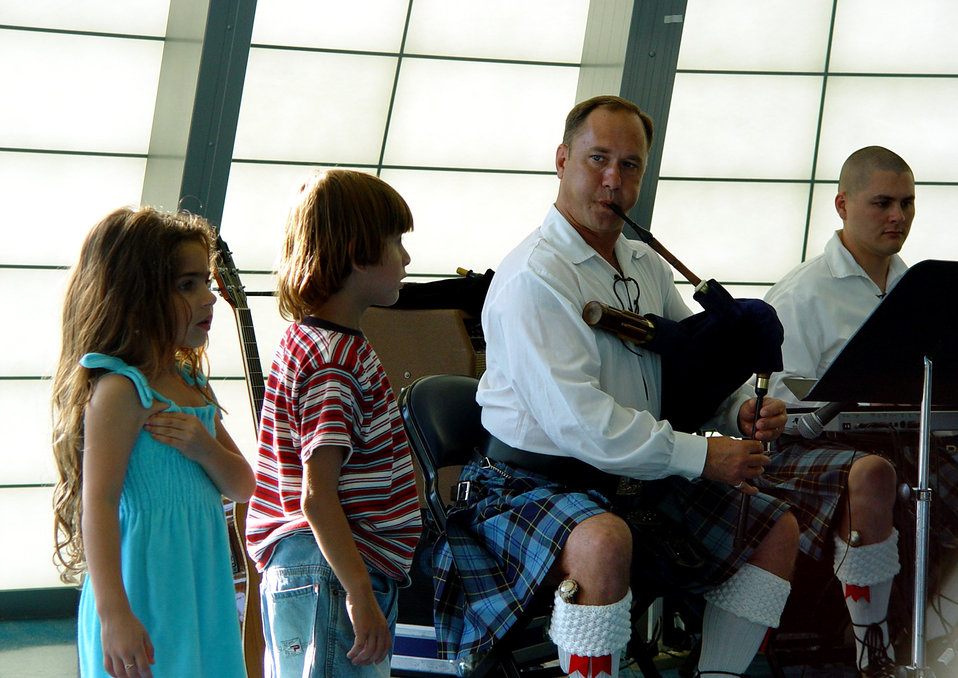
Air Force Reserve Band spreads goodwill

Master Sgt. Scott Gunn and Senior Airman Tim Shaw, members of the Band of the Air Force Reserve's Celtic ensemble, Southern Aire, perform at the Miami Children's Museum on May 19, 2006, as two children look on. The Band of the Air Force Reserve, from Robins Air Force Base, Ga., performed nine times in South Florida as part of a community outreach project.